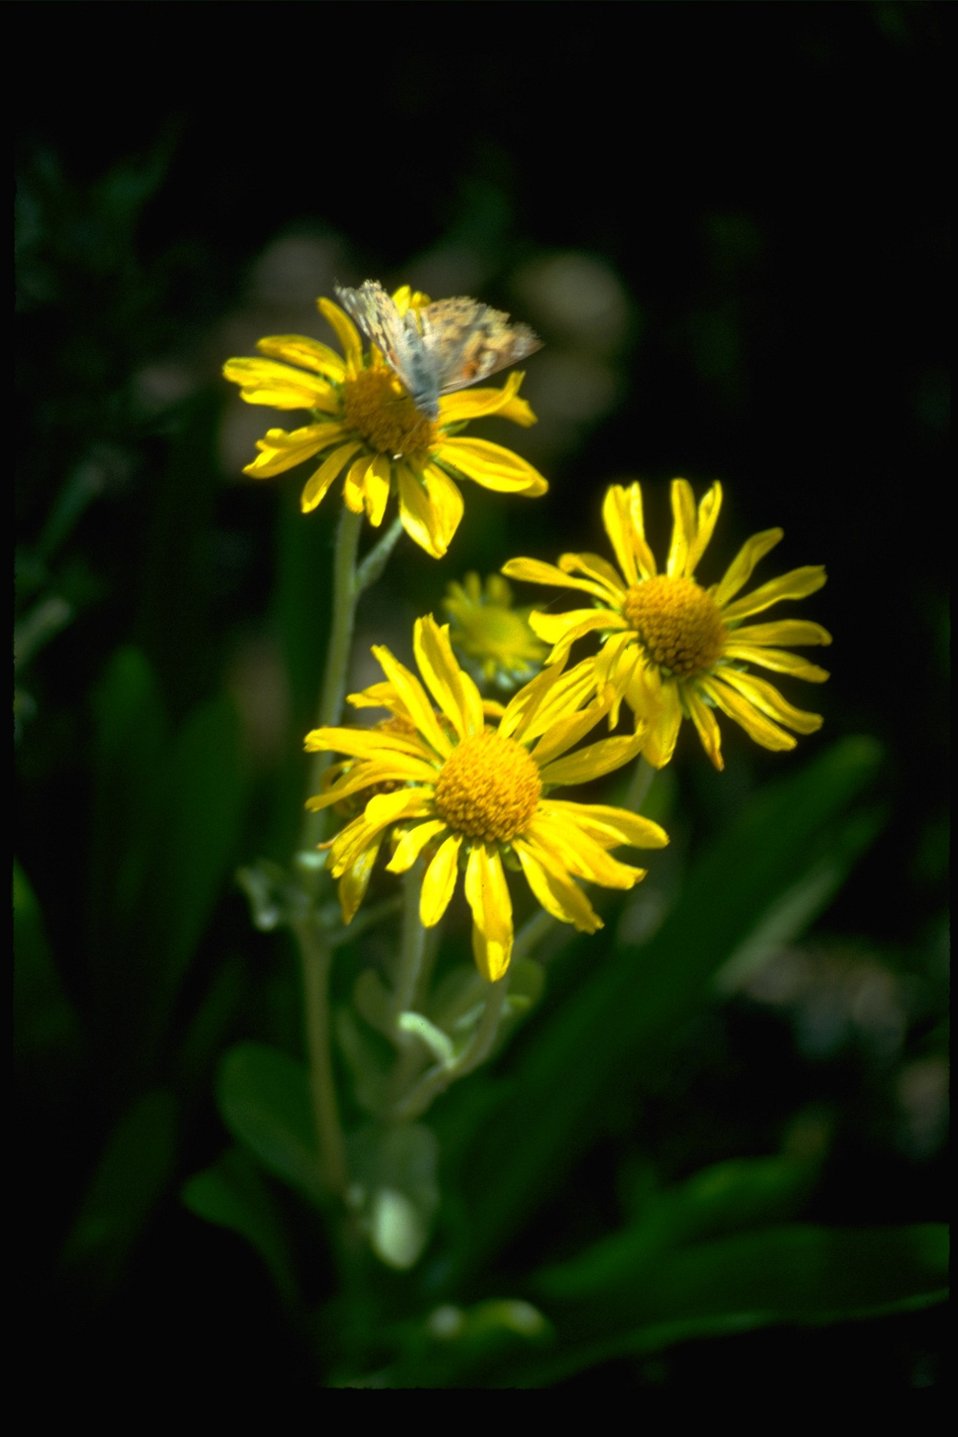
Sneezeweed (Helenium Hoopsii) found on Steens Mountain in Southeastern Oregon.